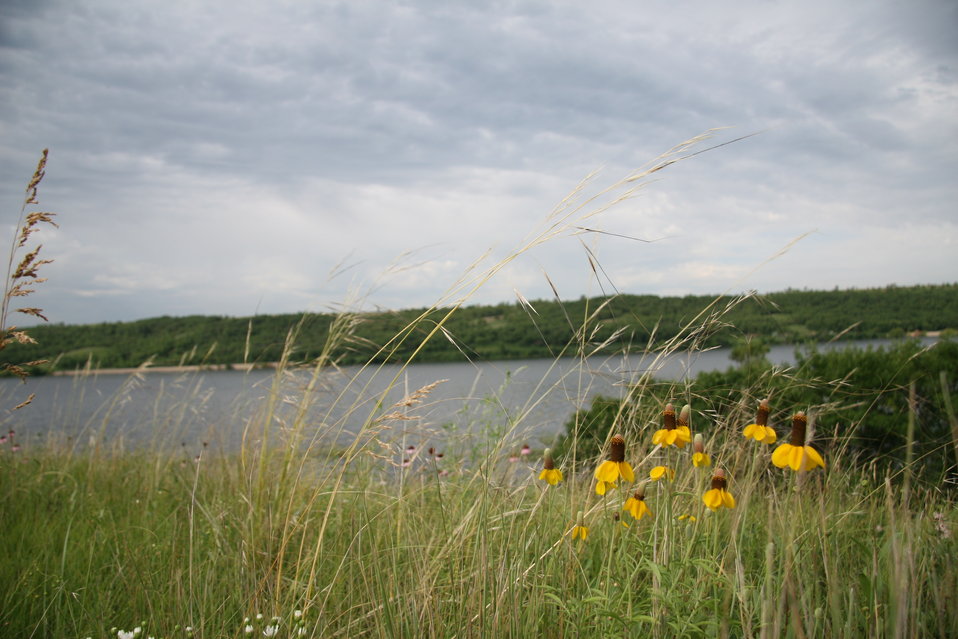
Des Lacs Lake

View of Des Lacs Lake at Des Lacs National Wildlife Refuge in North Dakota.